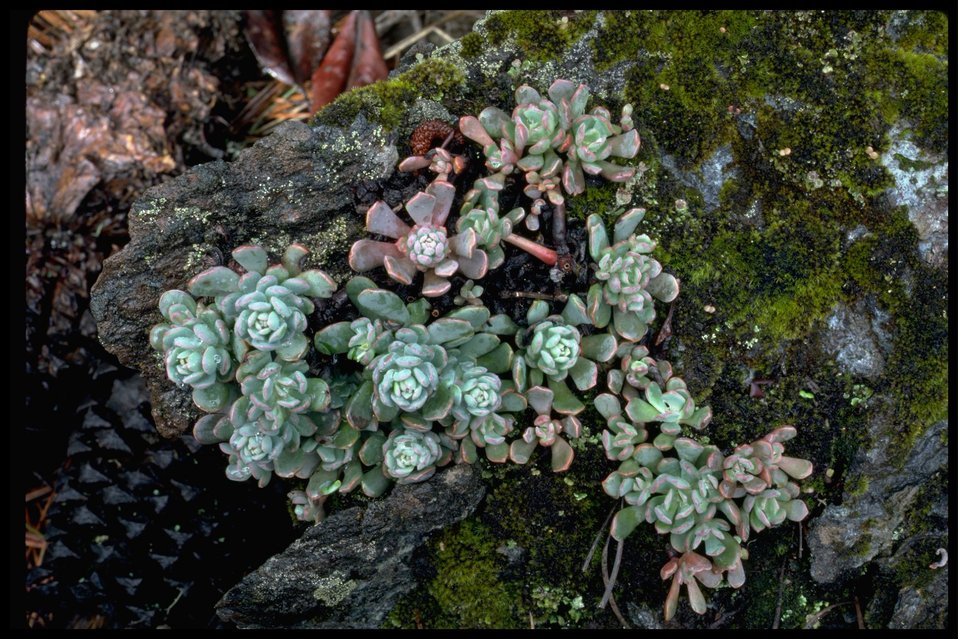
Sedum laxum, more commonly known as the Lax Stonecrop.